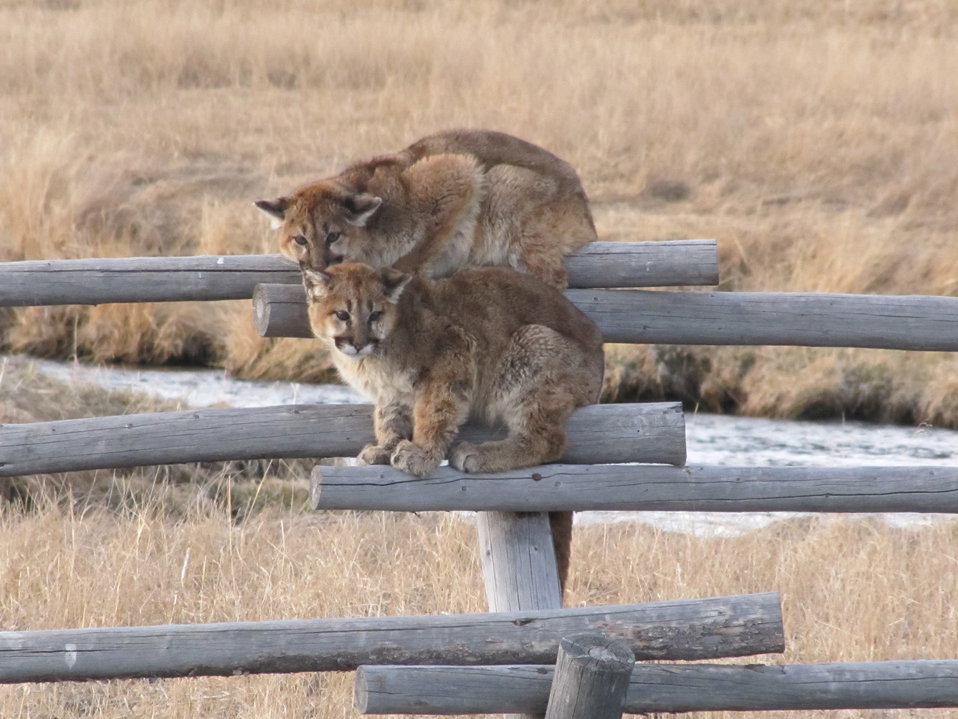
What Do We Do Now?

One in a series of seven photos:

The National Elk Refuge Outdoor Recreation Planner witnessed a spectacular standoff between two juvenile mountain lions and five coyotes. The coyotes let the cats know they weren’t welcome in the area. The mountain lions sought safety on a buck and rail fence for over an hour while the coyotes lurked in the background.

Credit: Lori Iverson / USFWS

This photo series has gone viral! Join the discussion on our Facebook page: www.facebook.com/photo.php?fbid=595246397154972&set=a...